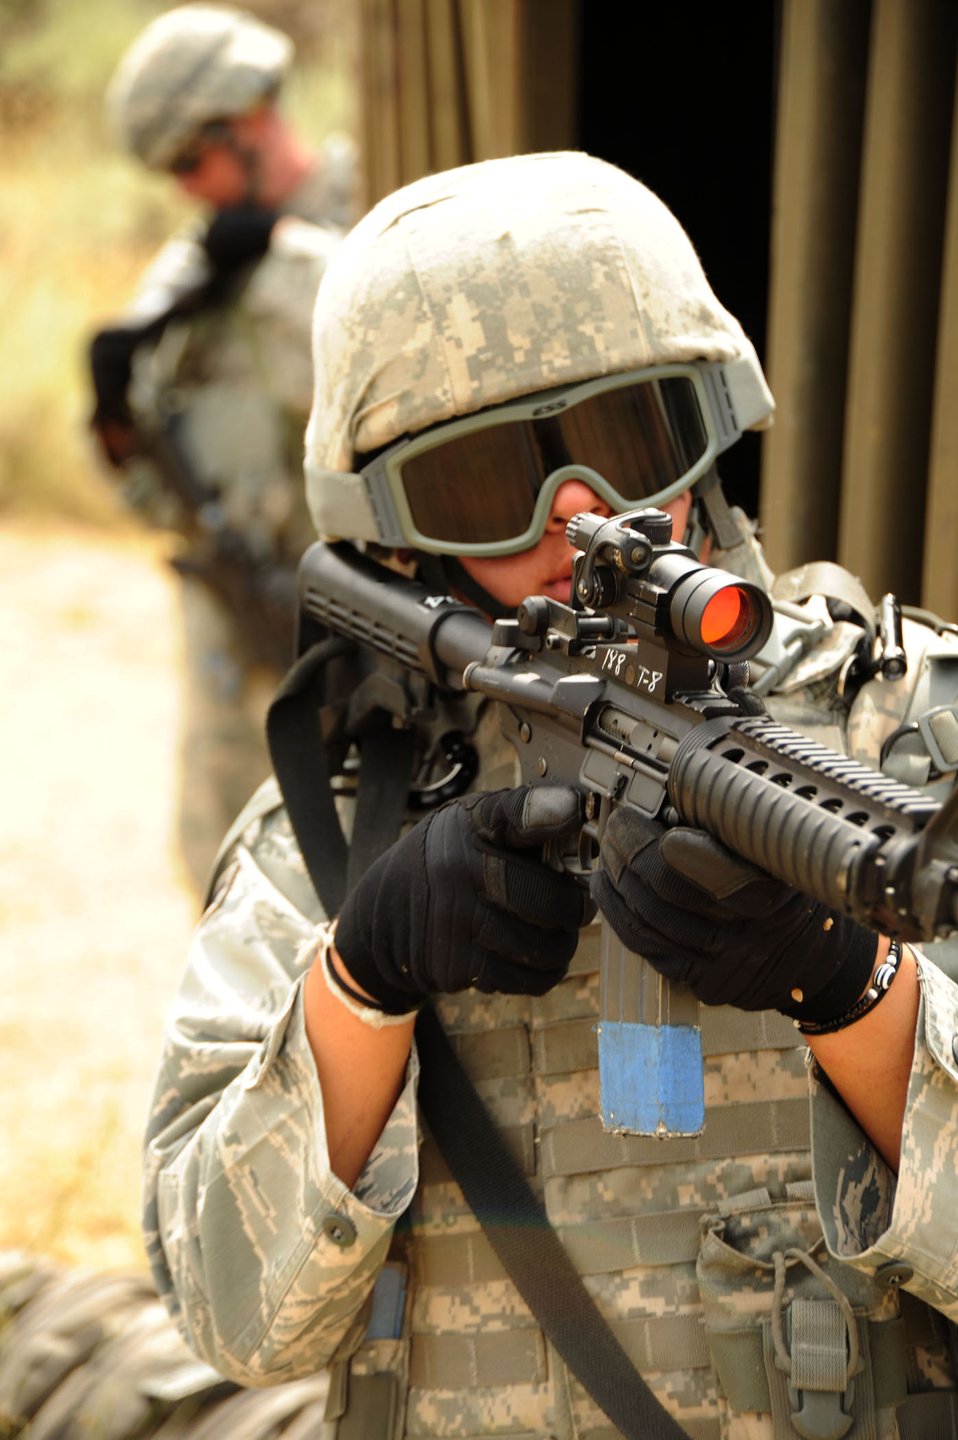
Security Forces Airmen take part in combat skills training

Airman 1st Class Amanda Urie provides overwatch during a week-long combat skills training course Aug. 27, 2010, at Hill Air Force Base, Utah. The training focused on individual skills, self-aid and buddy care and encountering staged scenarios with hostile forces.